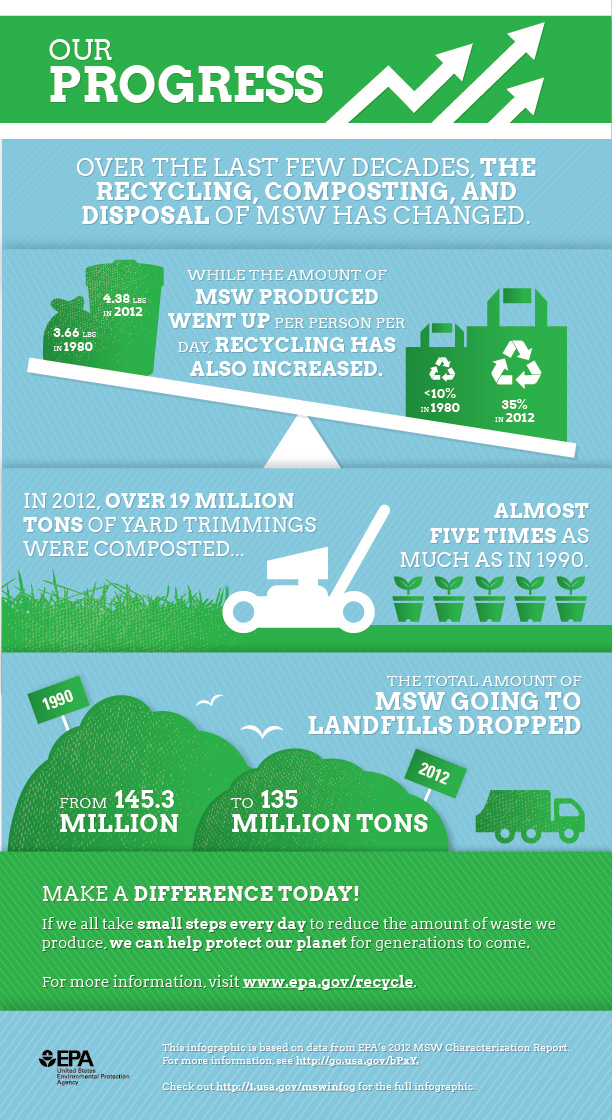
Our progress

We're recycling and composting a lot more than 30 years ago, but we can still do better. More than 60% of our trash still ends up in landfills or burned for energy recovery, when much of it can be reduced, reused, recycled, or composted.

- Full infographic: go.usa.gov/bPcA
- Find out what you can do: www.epa.gov/waste/wycd
- 2012 Municipal Solid Waste Characterization Fact Sheet: go.usa.gov/bPxY